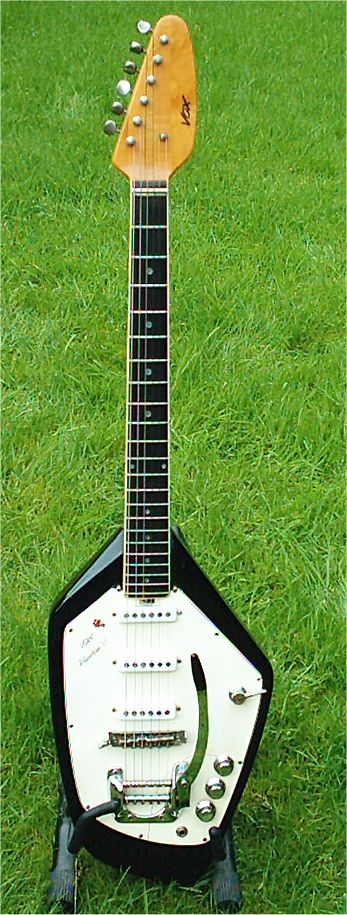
A black 1966 Vox Phantom. Probably manufactured in Italy.